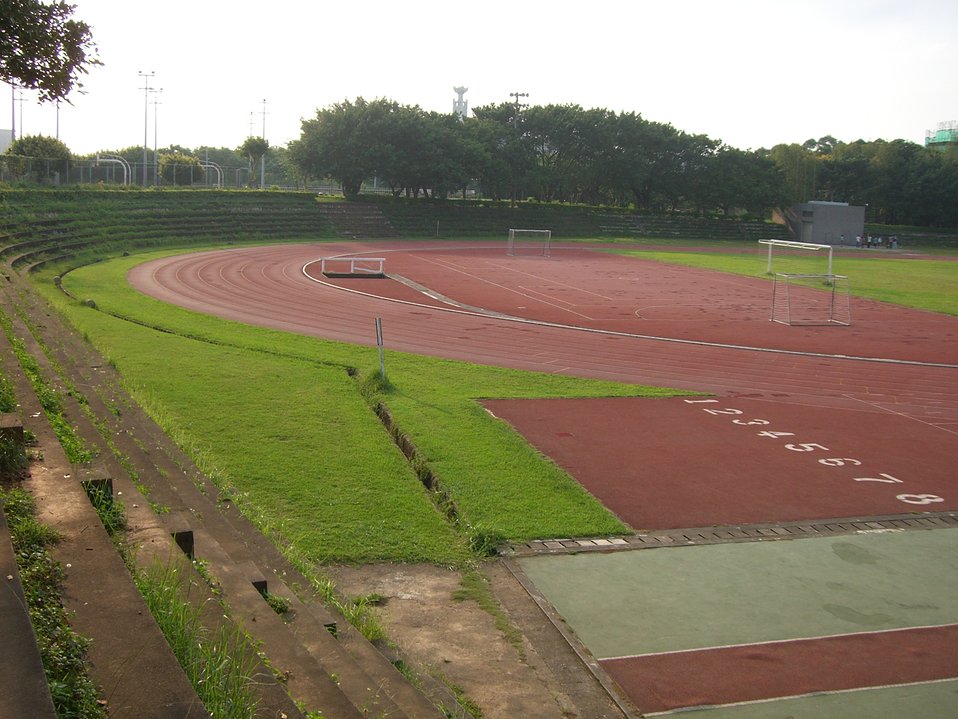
NCTU campus